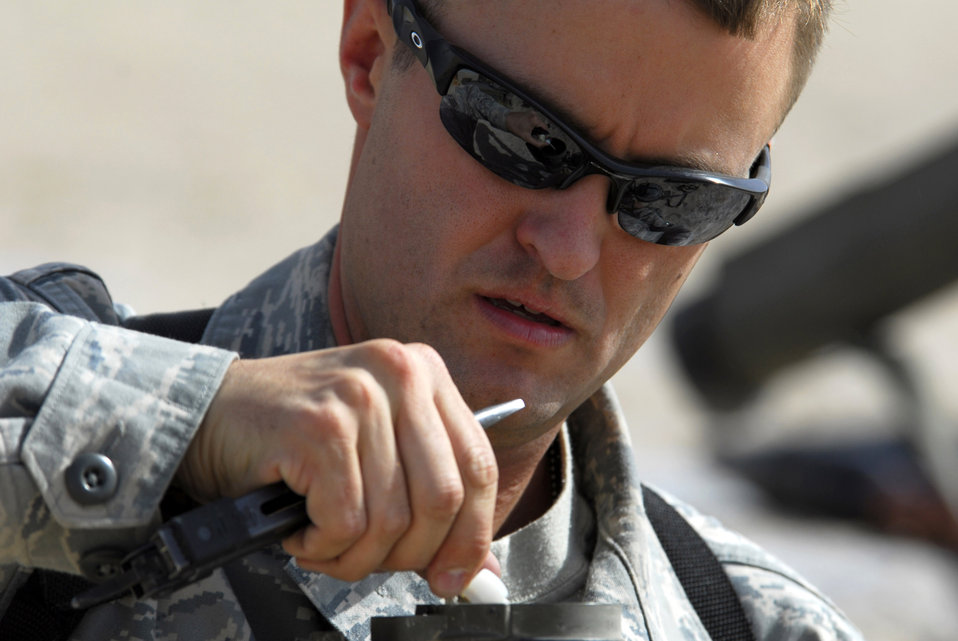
Americans, Australians go out with a bang

Senior Airman Charles Howell prepares a light anti-armor weapon rocket for disposal prior to a controlled detonation with coalition forces June 20 at an explosive ordnance disposal range in Southwest Asia. The joint detonation also provided an opportunity for the U.S. and coalition forces to enhance their relations while learning some of the slight differences in operating procedures. Airman Howell is assigned to the 386th Expeditionary Civil Engineer Squadron Explosive Ordnance Disposal Flight.